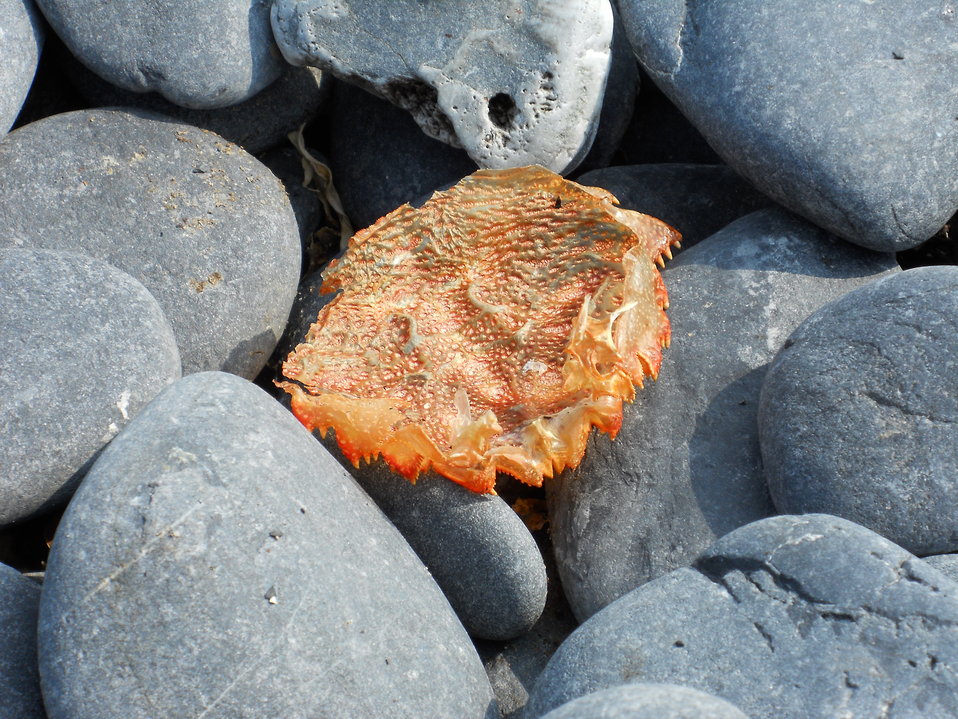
Crab Shell

Credit: USFWS
Photo taken by a Salmon Camp participant during a nature photography activity.

Source and Contact: Kodiak National Wildlife Refuge